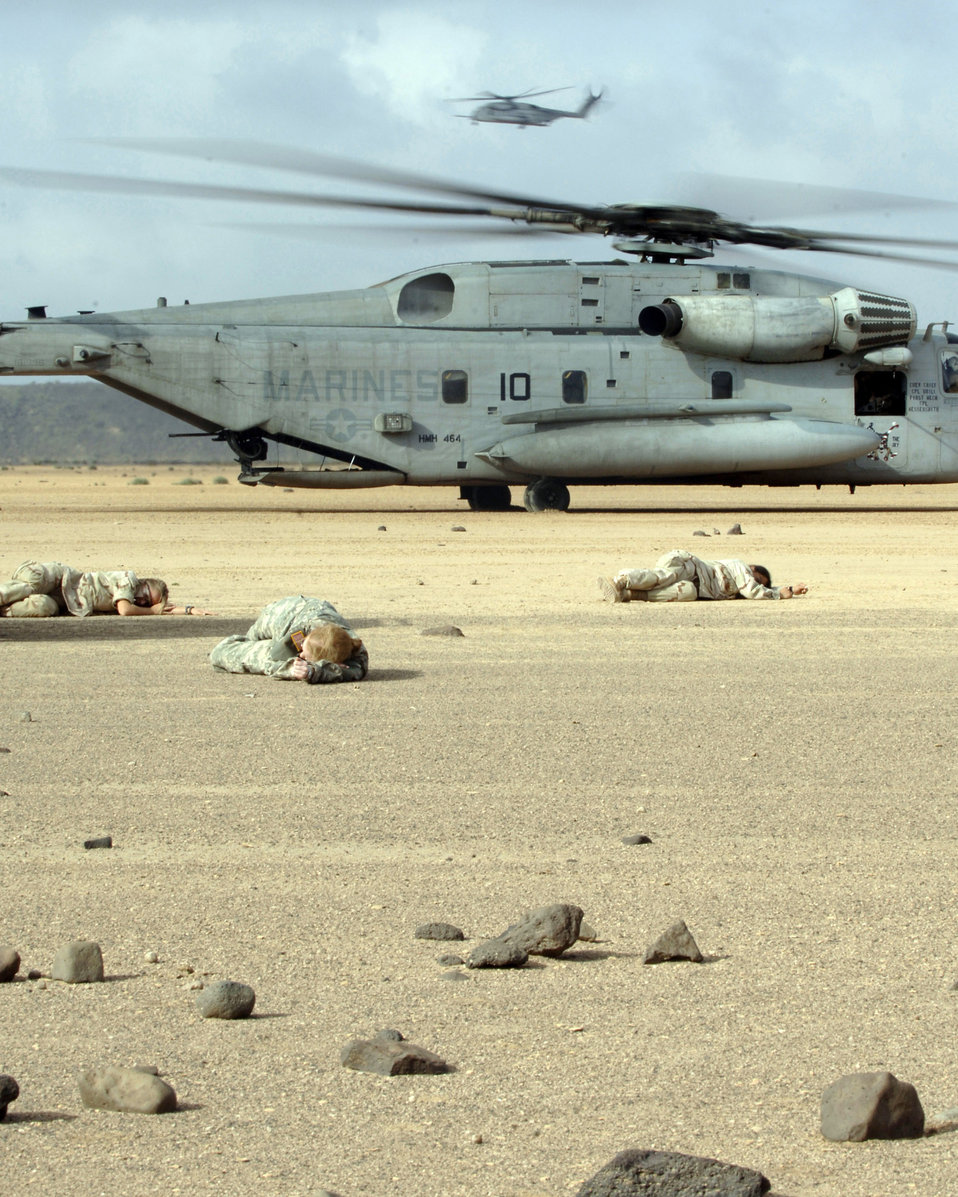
Search and rescue

CAMP LEMONIER, DJIBOUTI, Africa (AFPN) -- U.S. military members lay on the ground simulating a car crash injury, while Air Force pararescuemen in a Marine CH-53 Super Stallion helicopter prepare to pick them. The scenario was part of a search and rescue exercise here Feb 8.